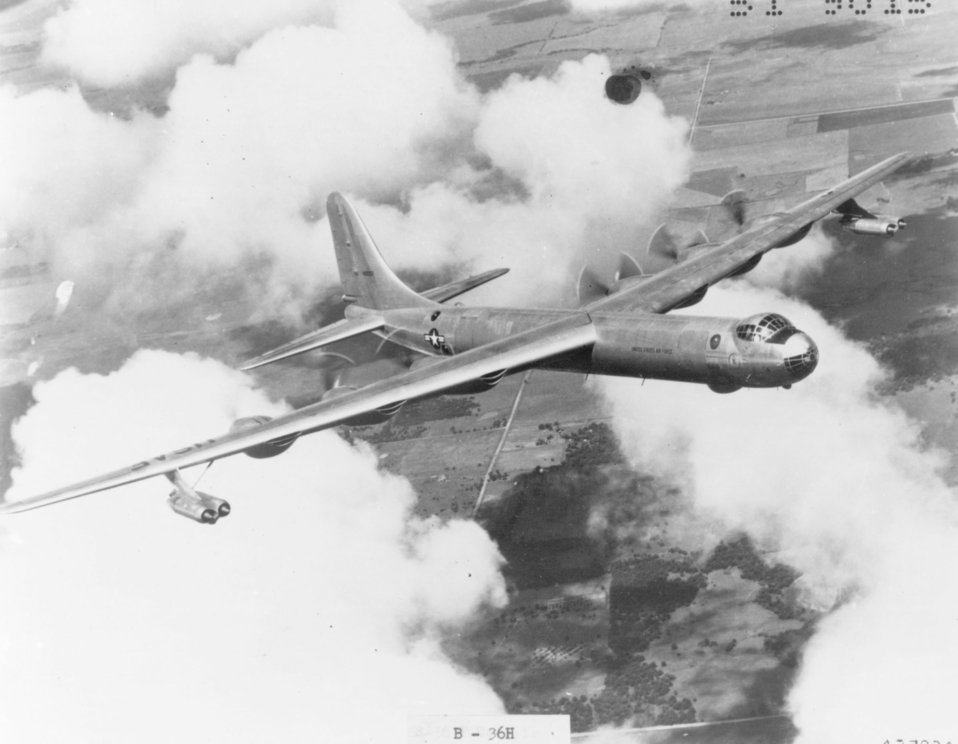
B-36

1940's -- B-36